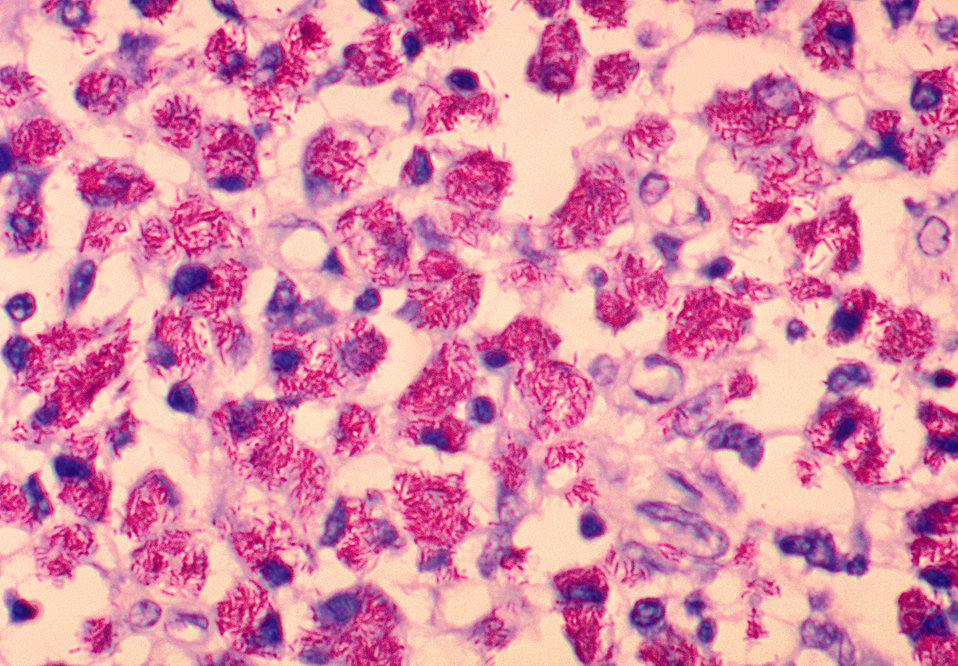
Mycobacterium avium-intracellulare infection of lymph node in patient with AIDS. Ziehl-Neelsen stain.